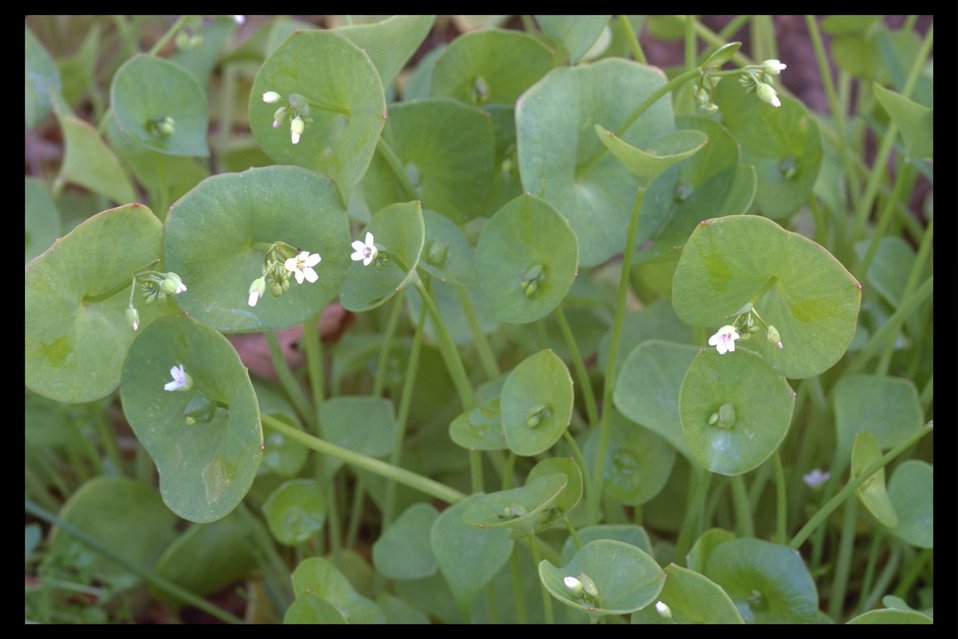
Miner's Lettuce (Claytonia perfoliata) at Shady Cove, near the Rogue River.